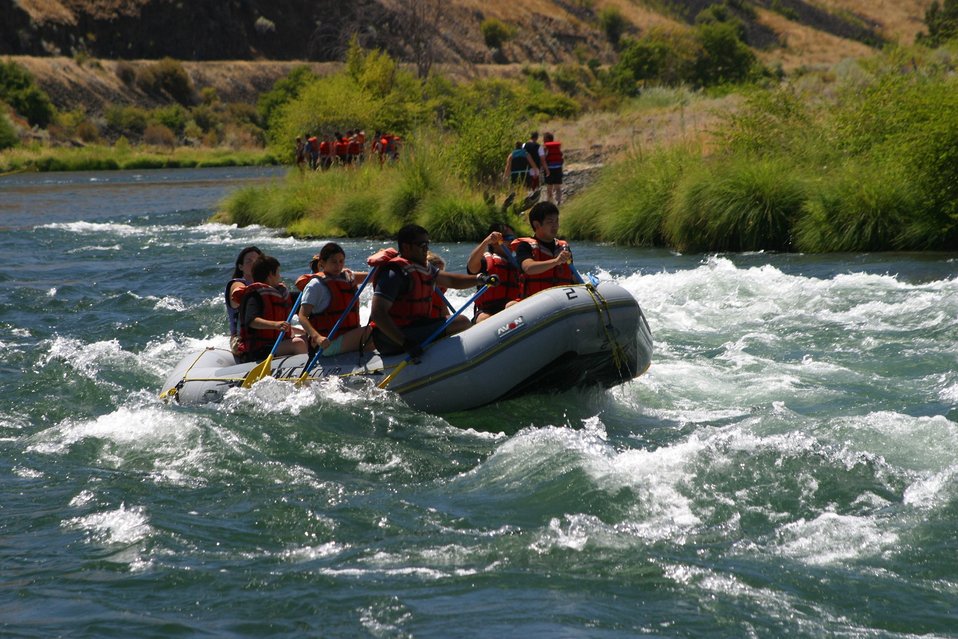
Elevator Rapids near Mile 46 on the Lower Deshcutes River. 7/26/03 Pelton Dam 3600 cfs: Moody Rapids 4300 cfs.